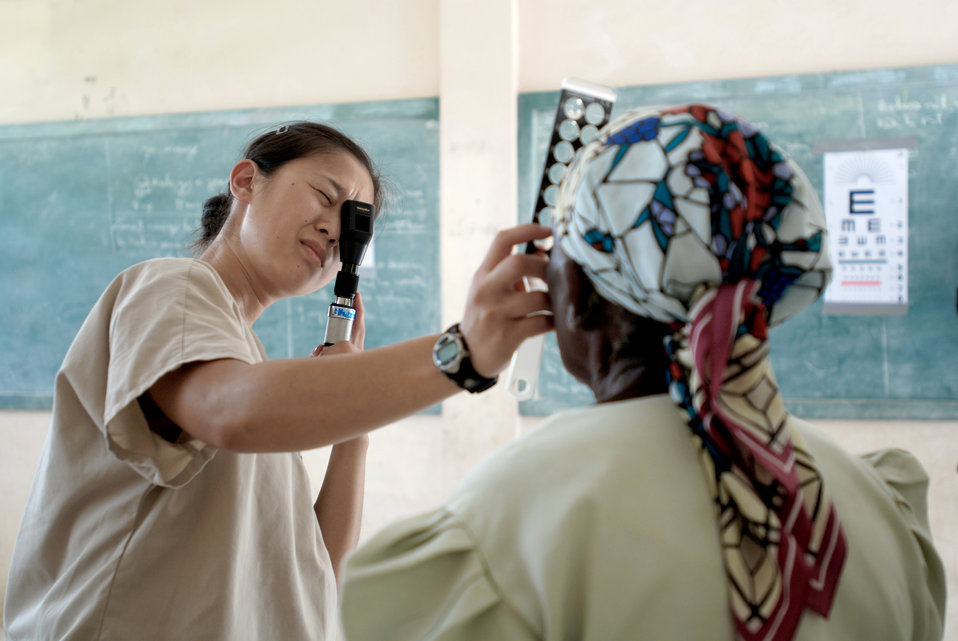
56th Medical Group Airmen provide medical support

Capt. Ivy Madson conducts an eye exam for a patient at the U.S. Army South New Horizons-Haiti 2010 Ennery medical assistance site July 13, 2010, in Mandrin, Haiti. Captain Madson is an optometrist with the 56th Medical Group.